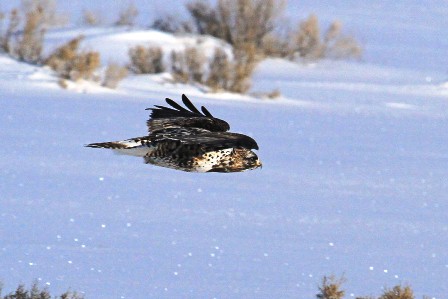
Gliding in for the Attack

This rough-legged hawk glides in, hoping to surprise its prey.